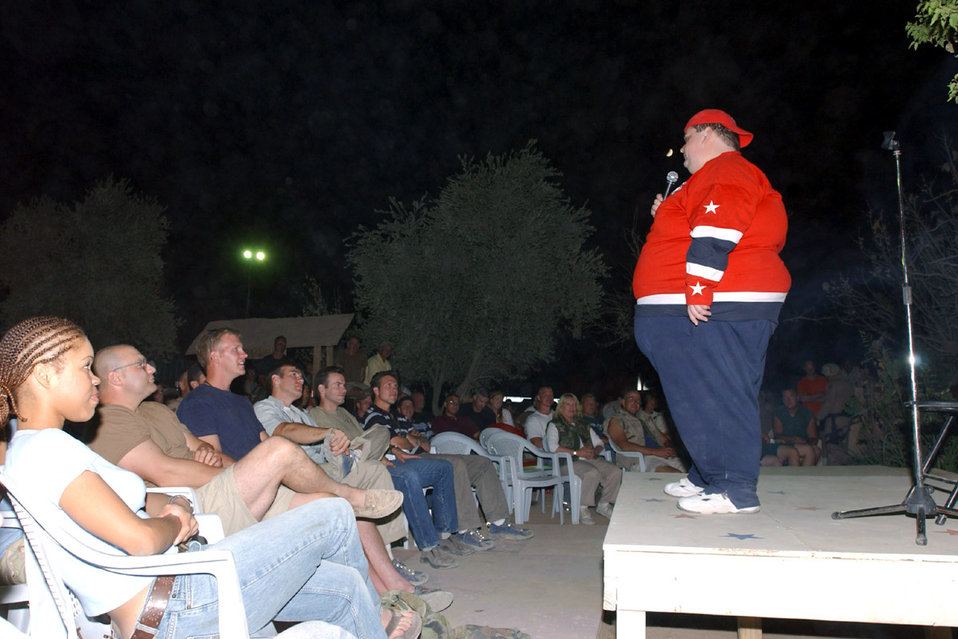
Laugh Factory Comedy Tour

KIRKUK AIR BASE, Iraq -- Ralphie May, the headliner for the USO Laugh Factory Comedy Tour, performed for more than 300 deployed people here Oct. 2.